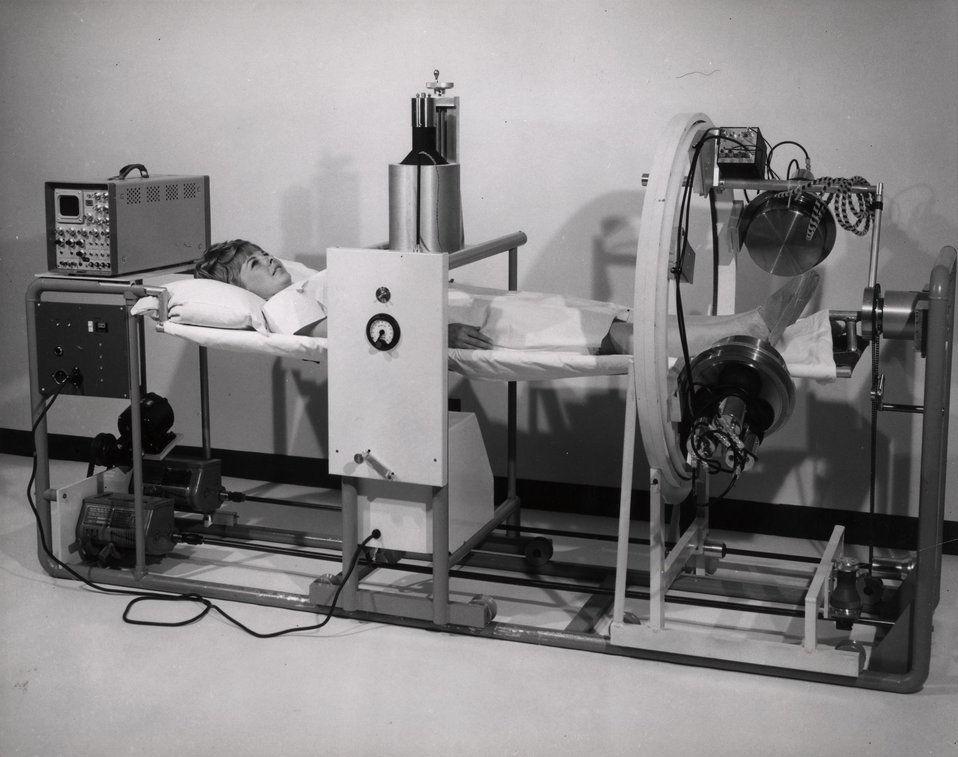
A new rotational whole body counter developed by the Atomic Energy Commission's Health Services Laboratory at the National Reactor Testing Station in Idaho, provides an improved method of pinpointing the location of gamma-emitting nuclides in the human body.